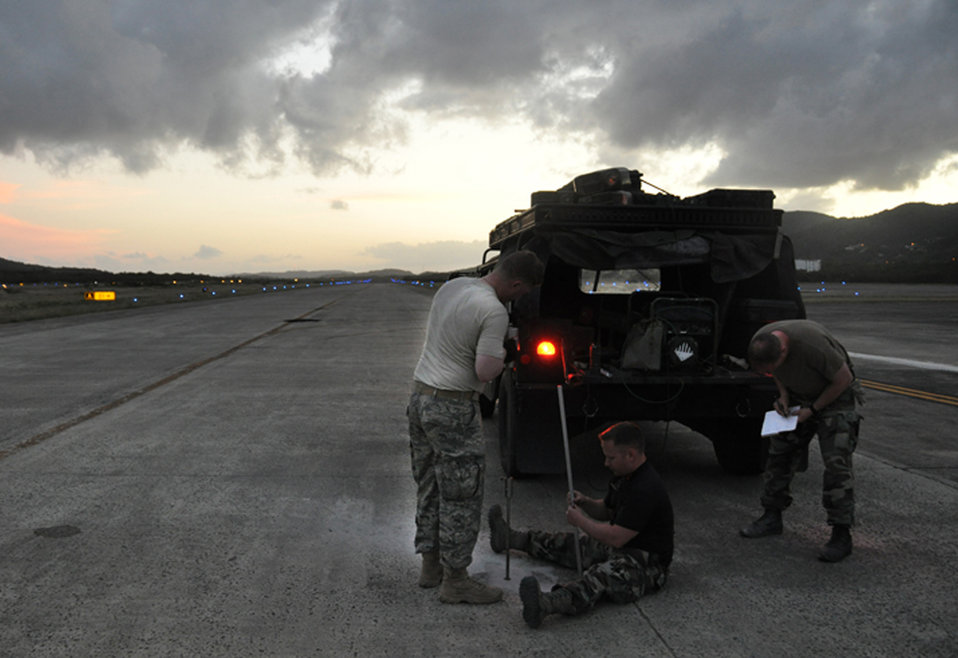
Vigilant Guard Exercise

Capt. Brian Loveless (from left), Staff Sgt. Joseph Reed and Capt. Luke Stumme, members of the 817th Contingency Response Group's